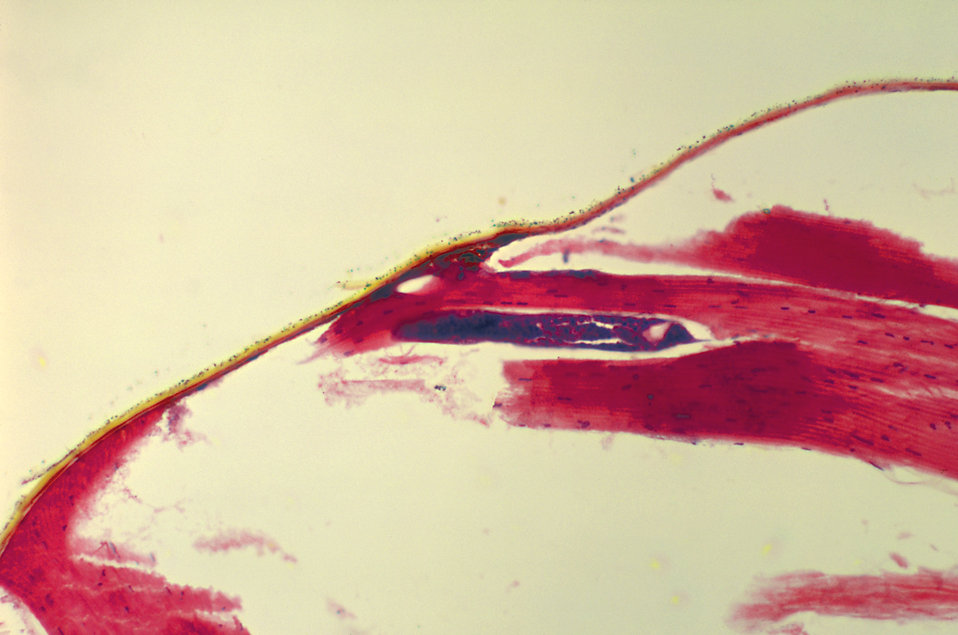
A photomicrograph revealing the histology of Onchocerca volvulus developing in a Black Fly, Simulium ochraceum.